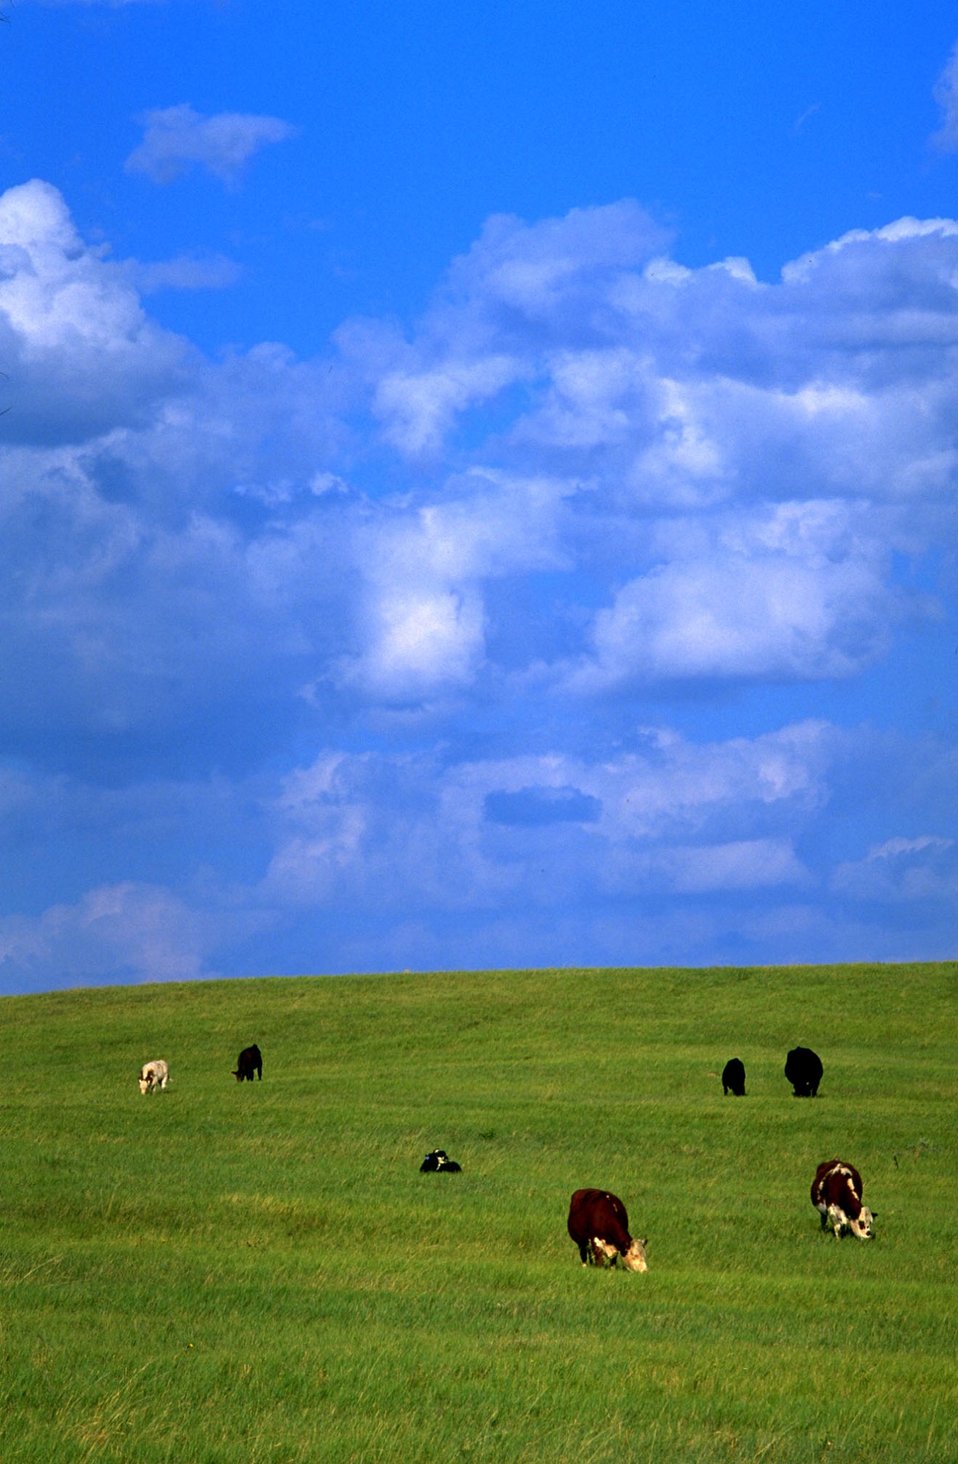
Cattle grazing 45 miles north of Belle Fourche